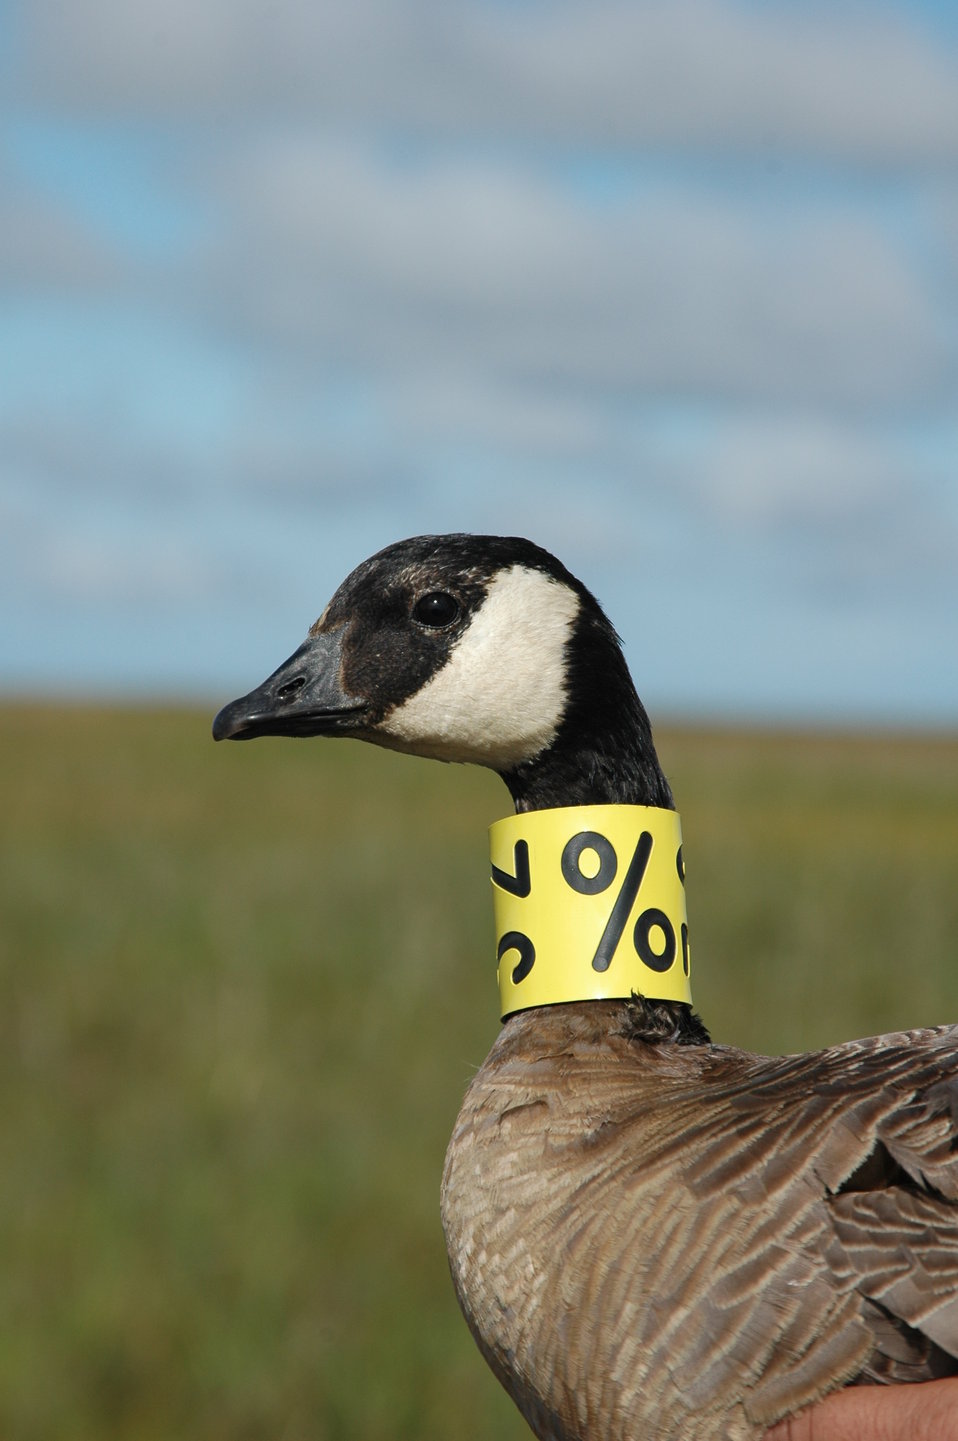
Collared

A group of biologists, volunteers, biotechs, refuge staff, migratory bird management staff, etc joined forces to band and collar cackling cackling geese on the Yukon-Kuskokwim Delta.

USFWS Yukon Delta NWR